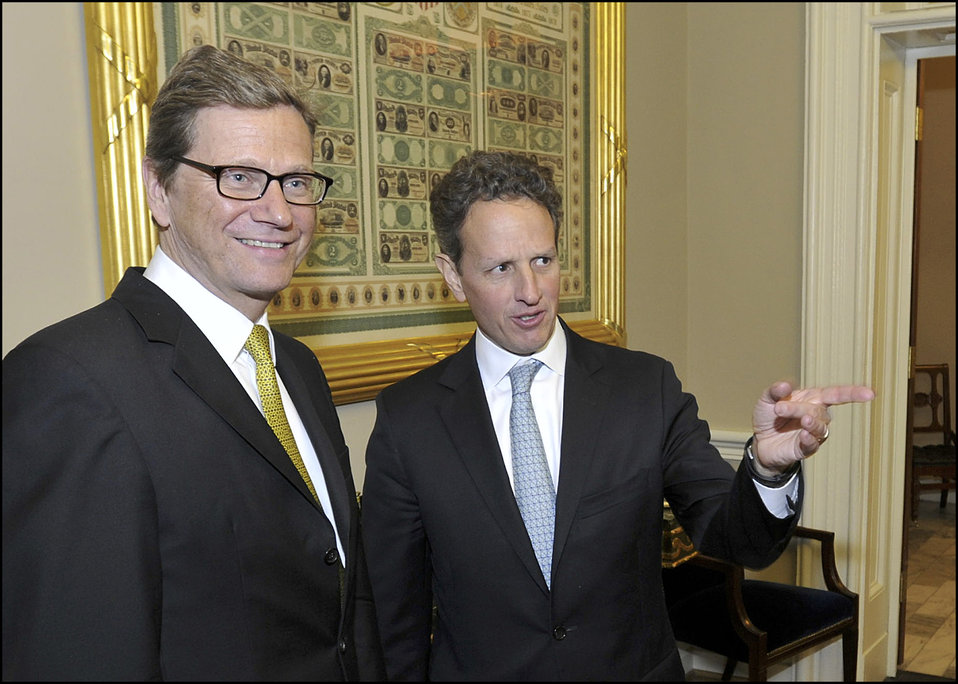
Secretary Geithner Meets with German Foreign Minister Guido Westerwelle

Treasury Secretary Tim Geithner and German Foreign Minister Guido Westerwelle in the Secretary’s Small Conference Room before a meeting on January 20, 2012.